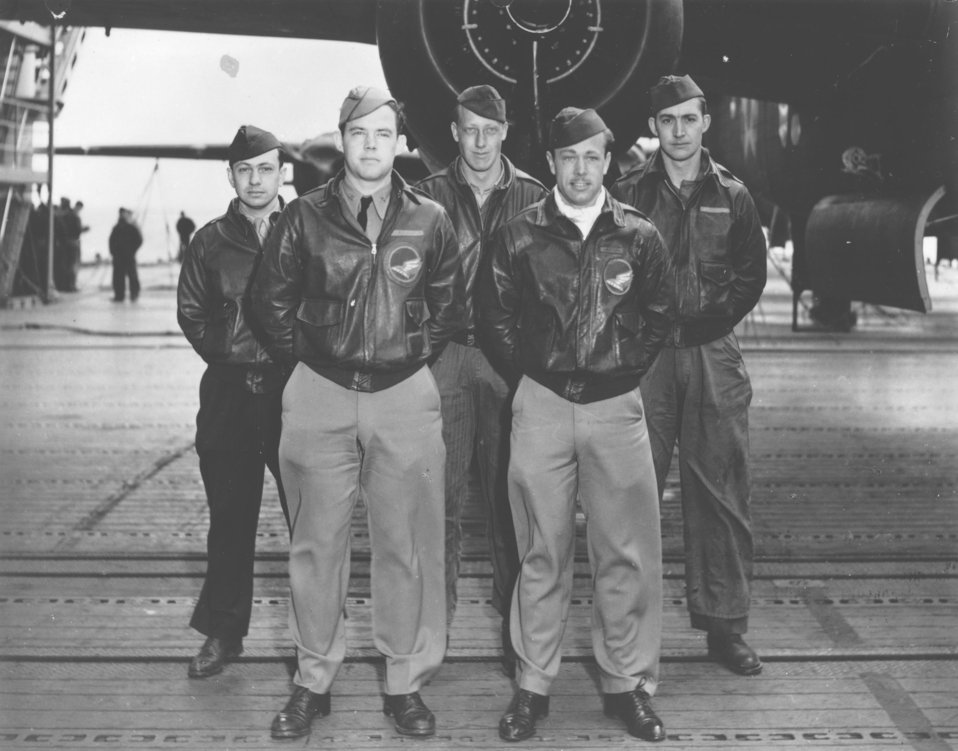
Doolittle Tokyo Raiders, Crew No. 10

Crew No. 10 (Plane #40-2250, target Tokyo): 89th Reconnaissance Squadron, front row: Lt. Richard O. Joyce, pilot; and Lt. J. Royden Stork, copilot; back row: Lt. Horace E. Crouch, navigator/bombardier; Sgt. George E. Larkin Jr., flight engineer; and Staff Sgt. Edwin W. Horton Jr., gunner.